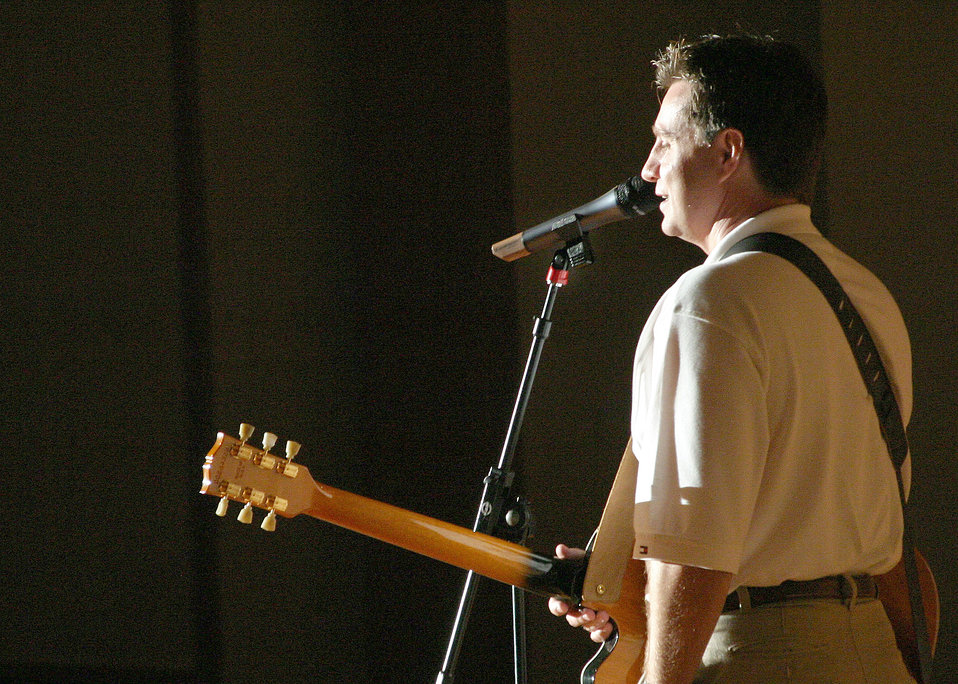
'Song pilot' visits Lackland

LACKLAND AIR FORCE BASE, Texas -- Singer/songwriter Dwayne O'Brien entertained about 400 basic trainees and base Airmen during a